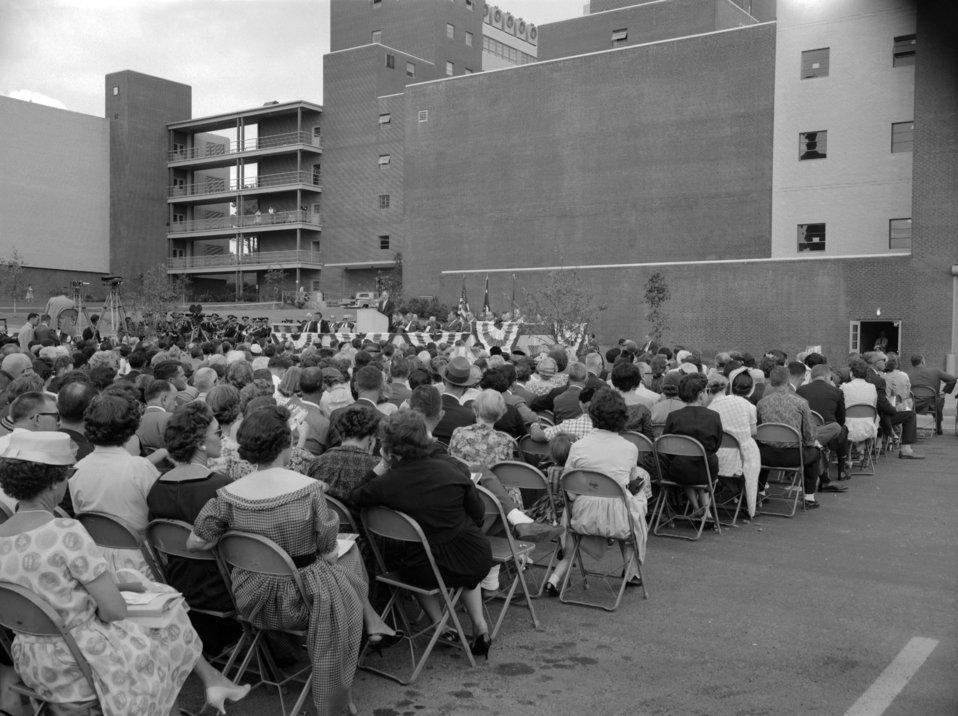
The 1960 CDC Dedication Ceremony, facing the rear of Bldg. 1.